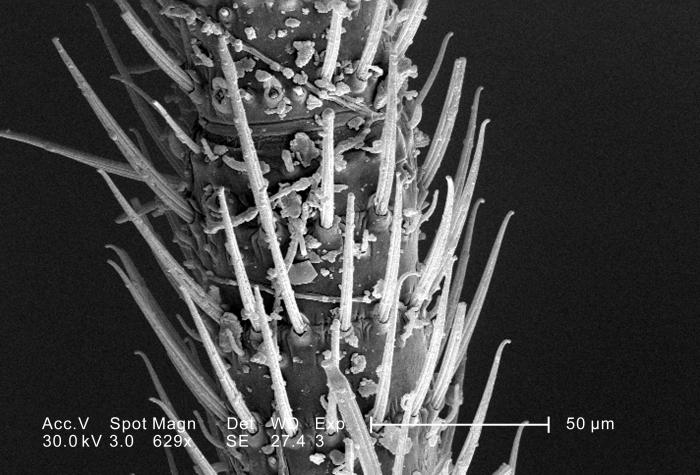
This scanning electron micrograph (SEM) depicted a highly magnified view of a leg of an unidentified green-colored flying insect found outside on the ground in the Decatur, Georgia suburbs; Magnified 629x. The debris covering the organism is mainly vegetative in nature, composed primarily of pollen granules, and disintegrated plant fibers.